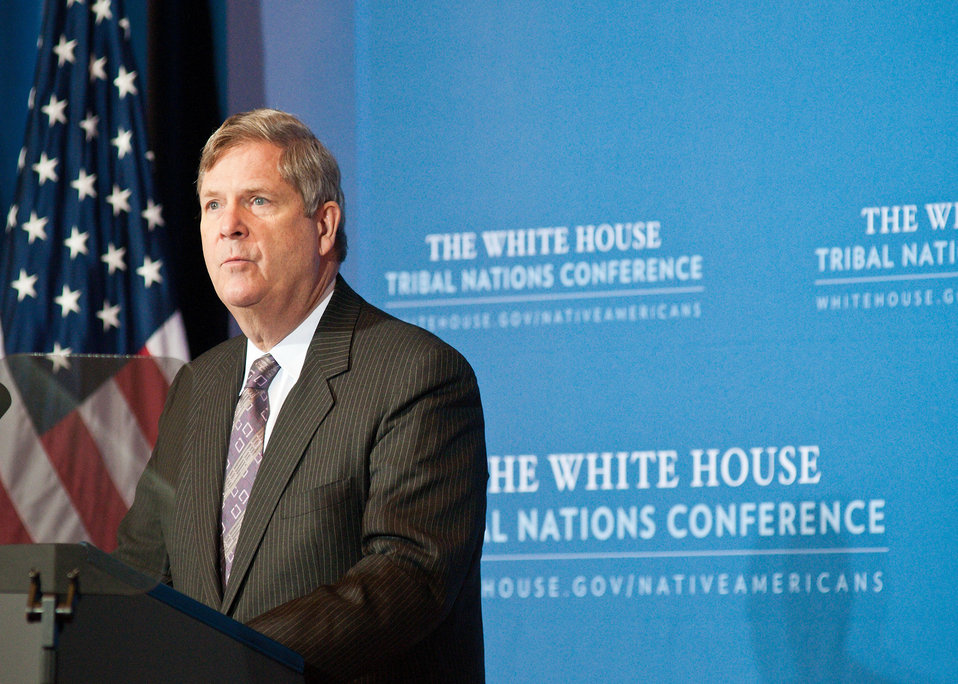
Agriculture Secretary Tom Vilsack speaks at the Fourth Annual White House Tribal Nations Conference at the U.S. Department of Interior in Washington D.C. on Wednesday, Dec. 5, 2012. Cabinet members Interior Secretary Ken Salazar, Agriculture Secretary Tom Vilsack, Education Secretary Arne Duncan, Treasury Deputy Secretary Neal Wolin, Commerce Acting Secretary Rebecca Blank, Health and Human Services Secretary Kathleen Sebelius discussed the gains and progress of the Obama Administration concerning Native American Tribal Nations.